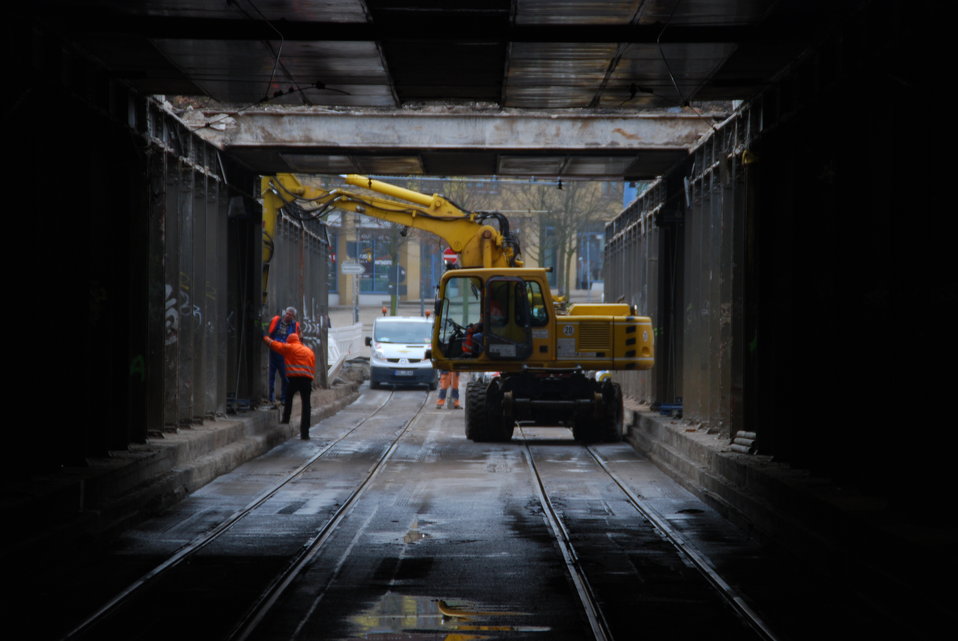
Abriss Bahnhofstunnel Frankfurt (Oder)